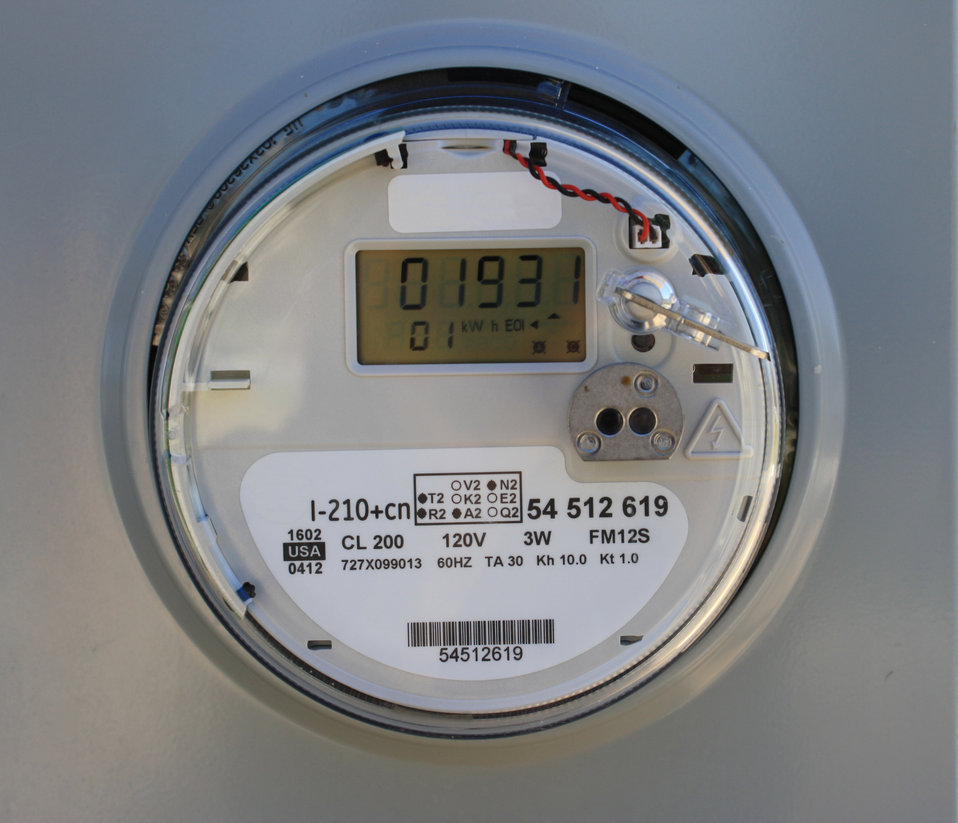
Smart Meter

New NIST guidelines for smart grid cybersecurity will address many uses of the technology, including home smart meters like this one.